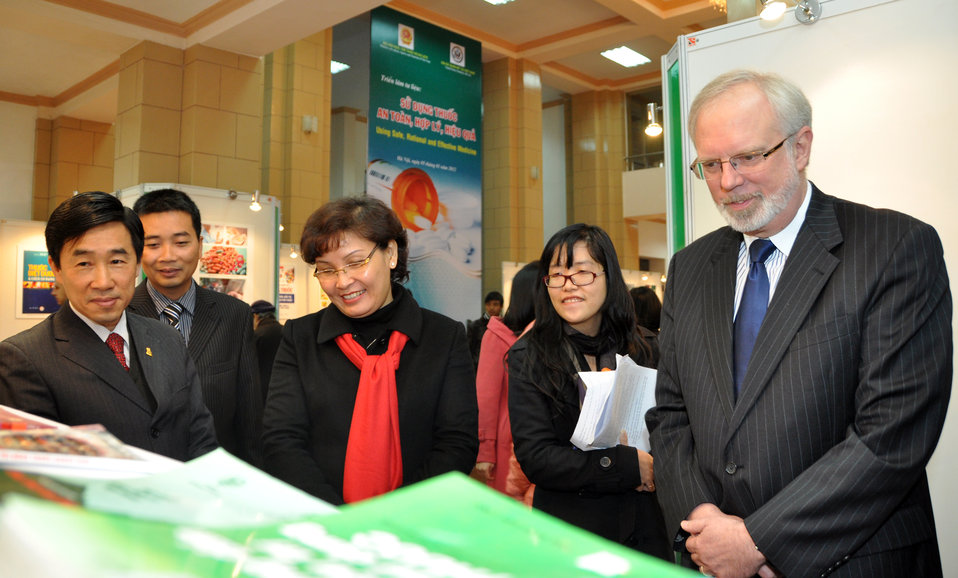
U.S. Ambassador David Shear opens safe medicine exhibition in Hanoi

Safe Medicine Exhibition